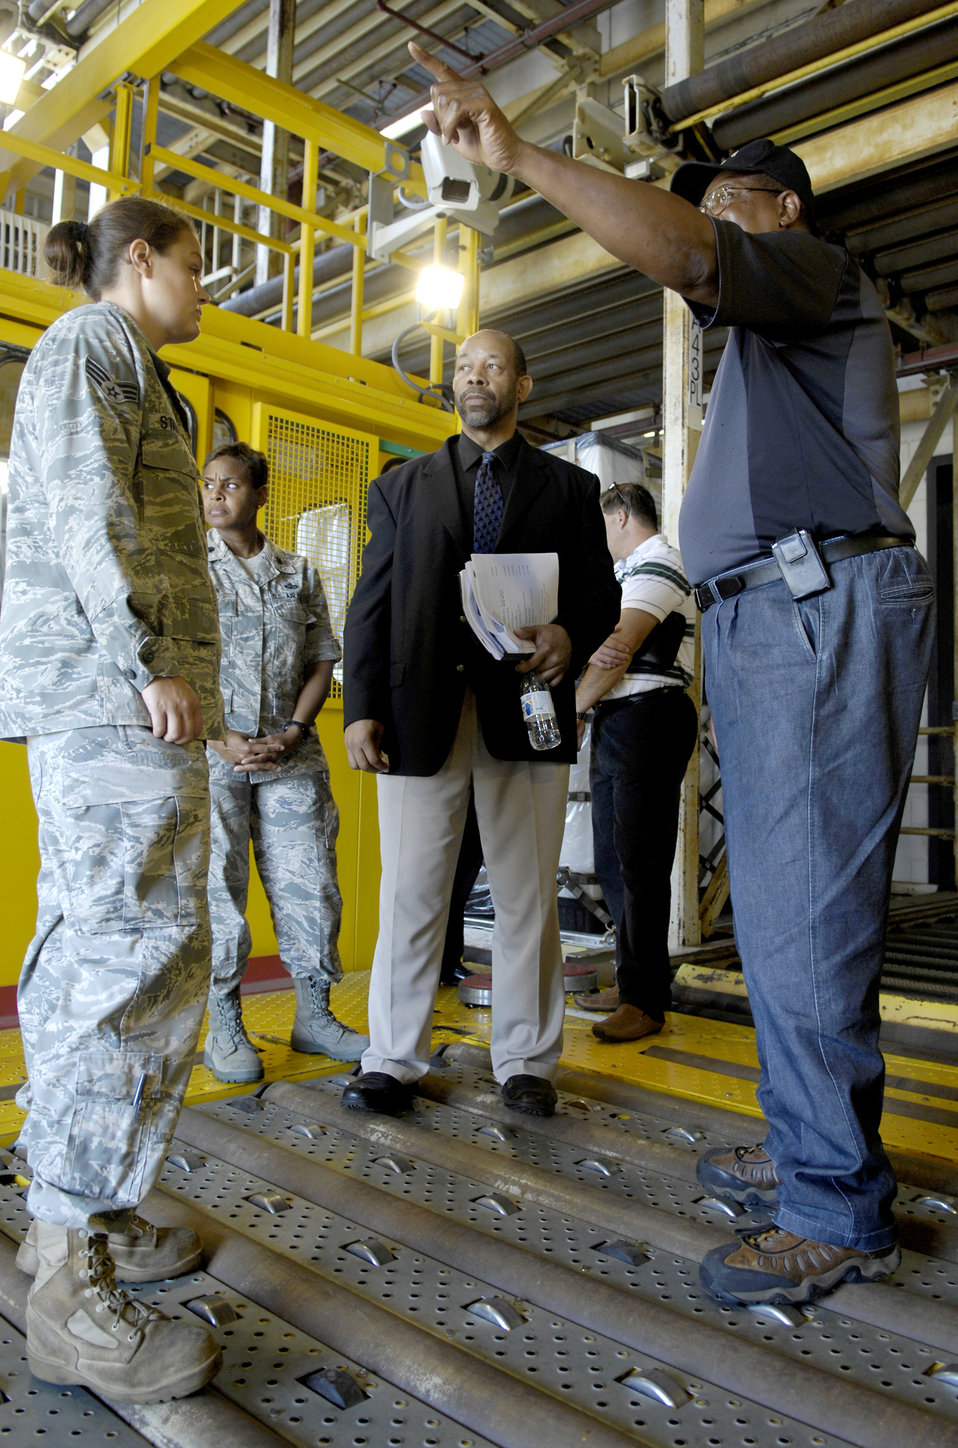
Scientists envision robotic aerial port

Bobby Robinson guides a group of scientists and engineers from the Air Force Research Laboratory through the 437th Aerial Port Squadron July 16, 2010 at Joint Base Charleston, S.C. The researchers visited JB Charleston's to look for potential improvements that could be made to increase efficiency via robotics. Mr. Robinson is an air freight supervisor with the 437th APS.